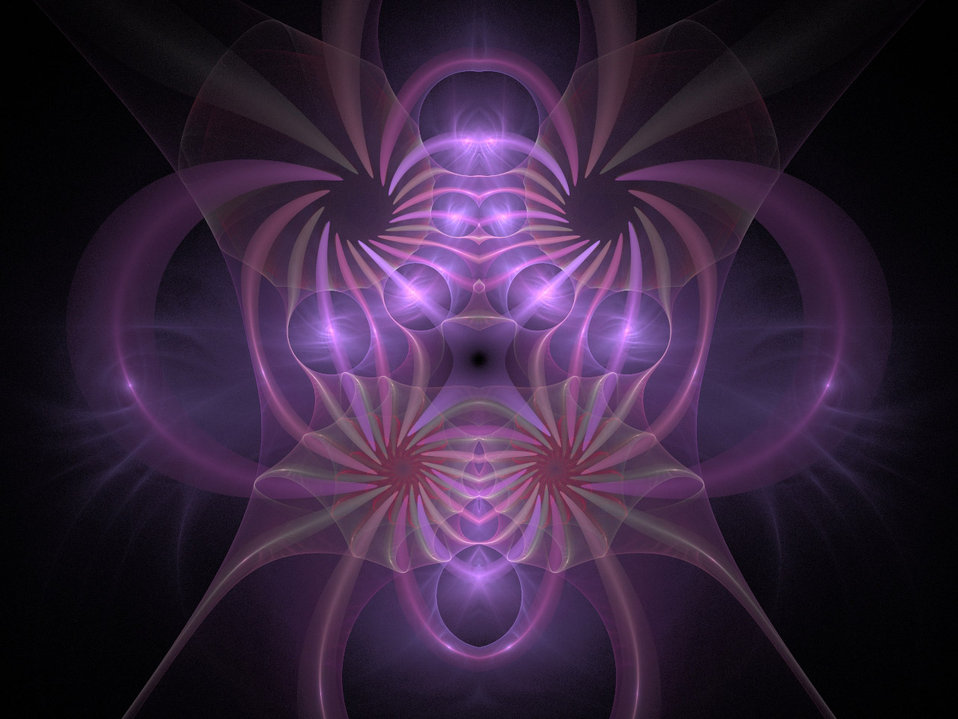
Purple and pink

Fractal image in purple and pink.